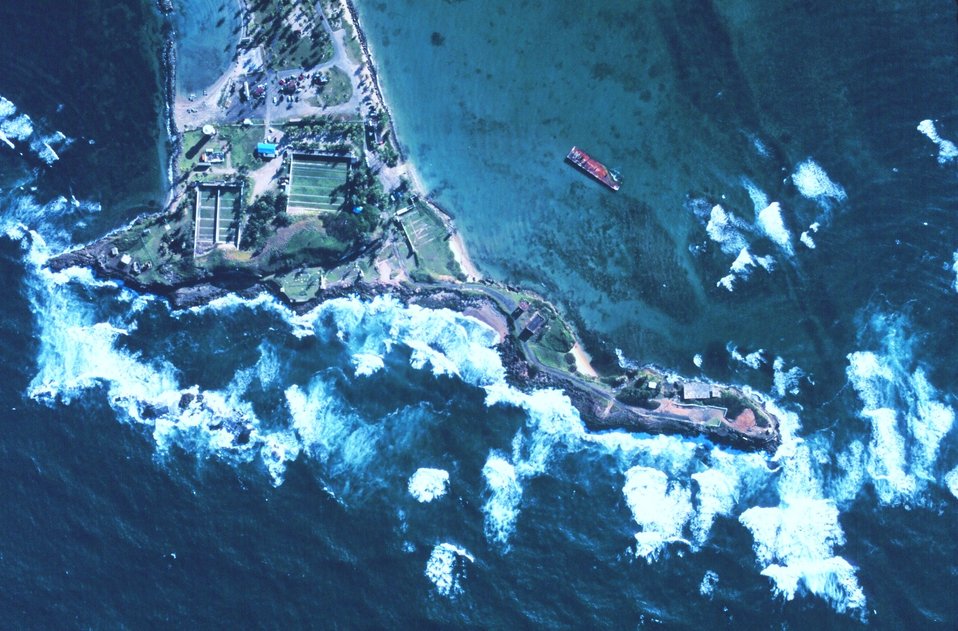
Surf, reef, and rocky headland. Note barge aground on backside of headland.